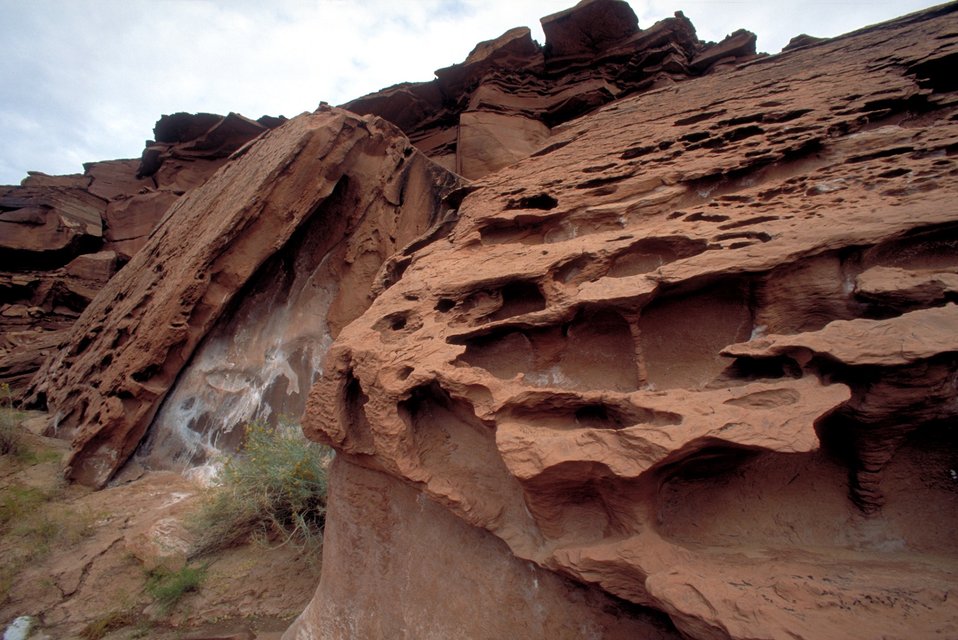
Red Canyon Loop, San Rafael Swell.